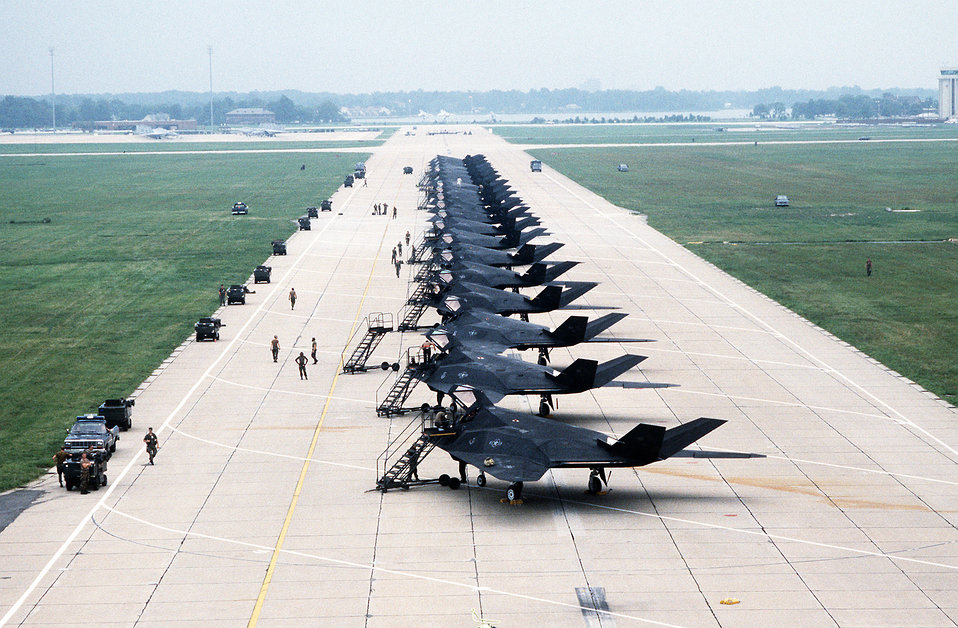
Ground crews service the F-117A

1990's -- Ground crews service the F-117A aircraft of the 37th Tactical Fighter Wing on the flight line. The 37th TFW is preparing to deploy to Saudi Arabia for Operation Desert Shield.